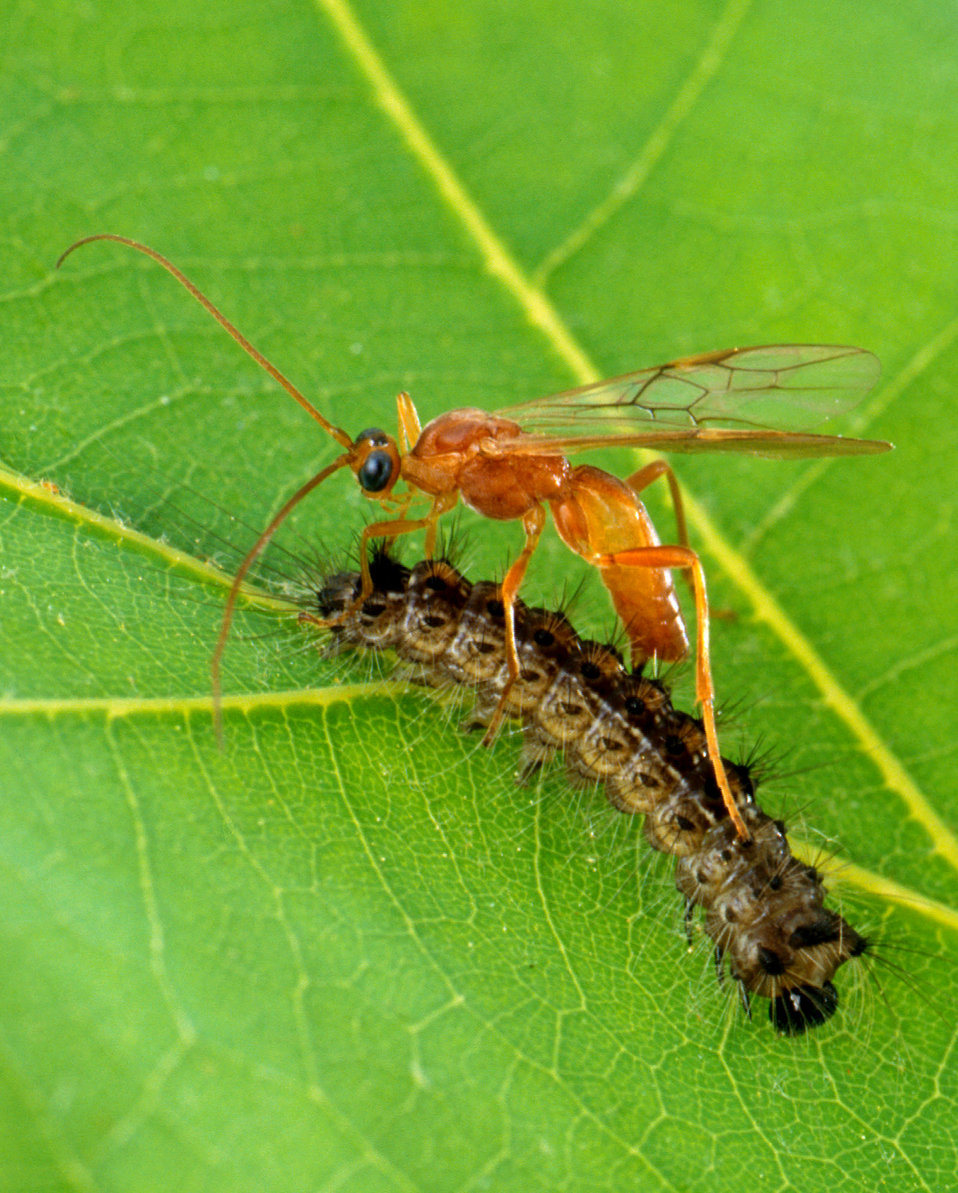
Aleiodes indiscretus wasp parasitizing a gypsy moth caterpillar.